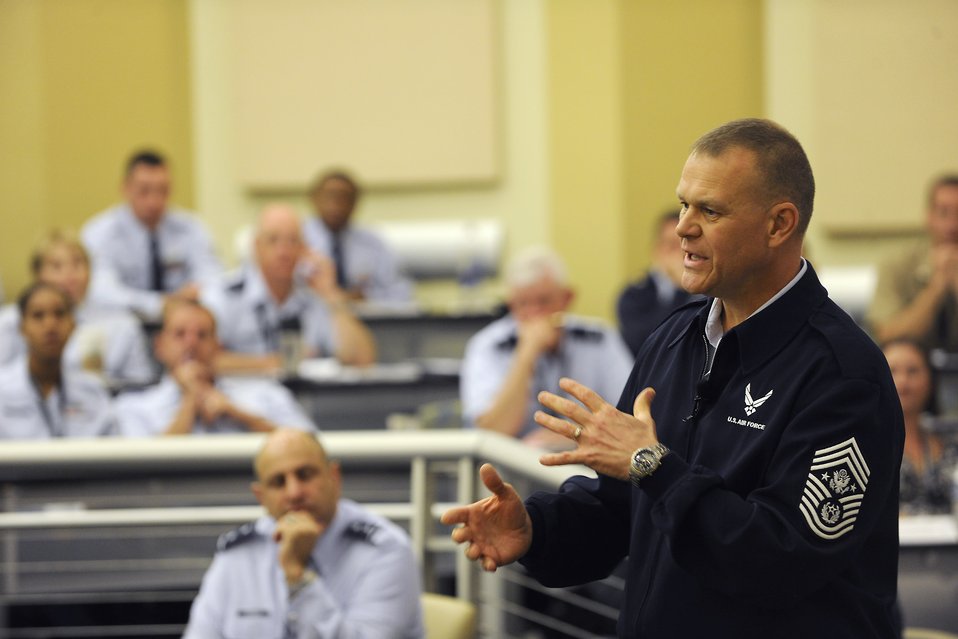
Caring for People

Chief Master Sergeant of the Air Force James Roy speaks at the Caring for People Forum at Joint Base Andrews, Md., on Sept. 26, 2012. This is the fourth annual forum which provides strategies for commanders, leaders and care professionals to help Airmen and their families.